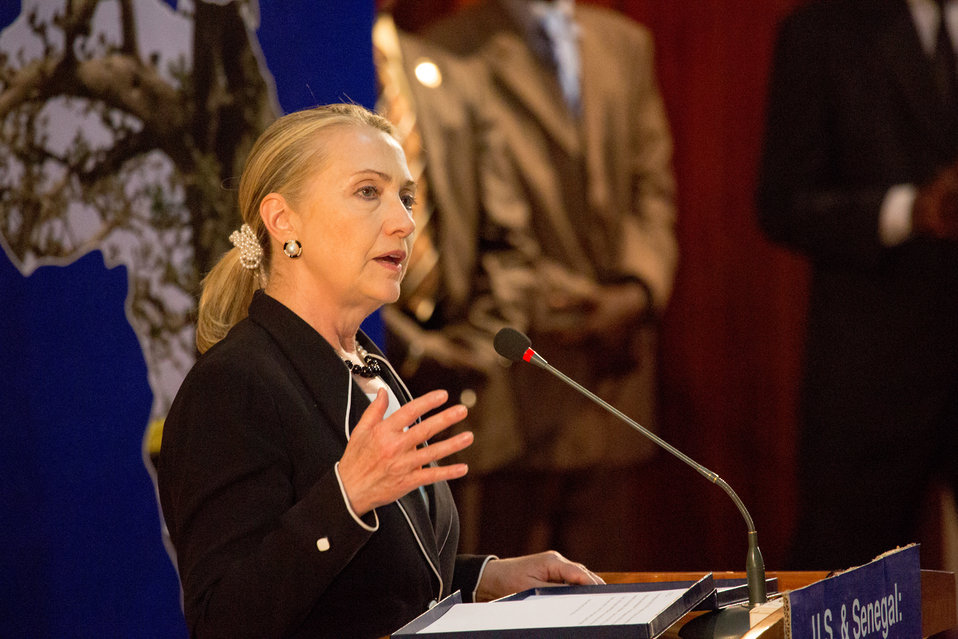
Secretary Clinton Delivers Remarks on U.S. and Senegal: Building Sustainable Partnerships

U.S. Secretary of State Hillary Rodham Clinton delivers remarks on the U.S. and Senegal: Building Sustainable Partnerships in Dakar, Senegal, on August 1, 2012.